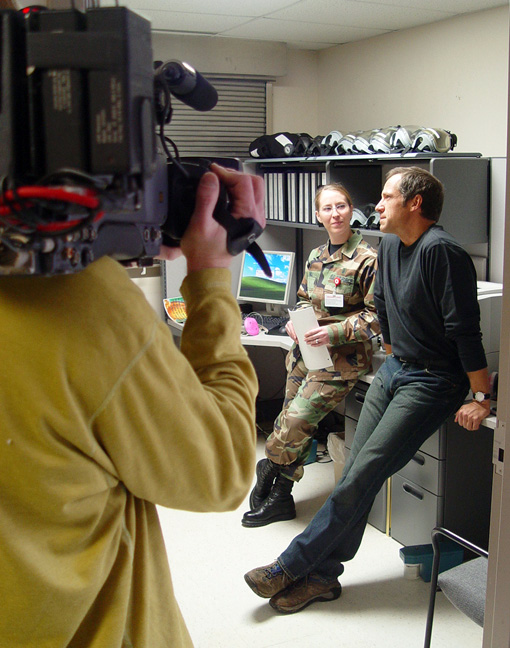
Dirty jobs

MCCONNELL AIR FORCE BASE, Kan. (AFPN) - Staff Sgt. Andrea Hill briefs Mike Rowe before his respirator fitness test. Mr. Rowe is the host and star of the Discovery Channel's